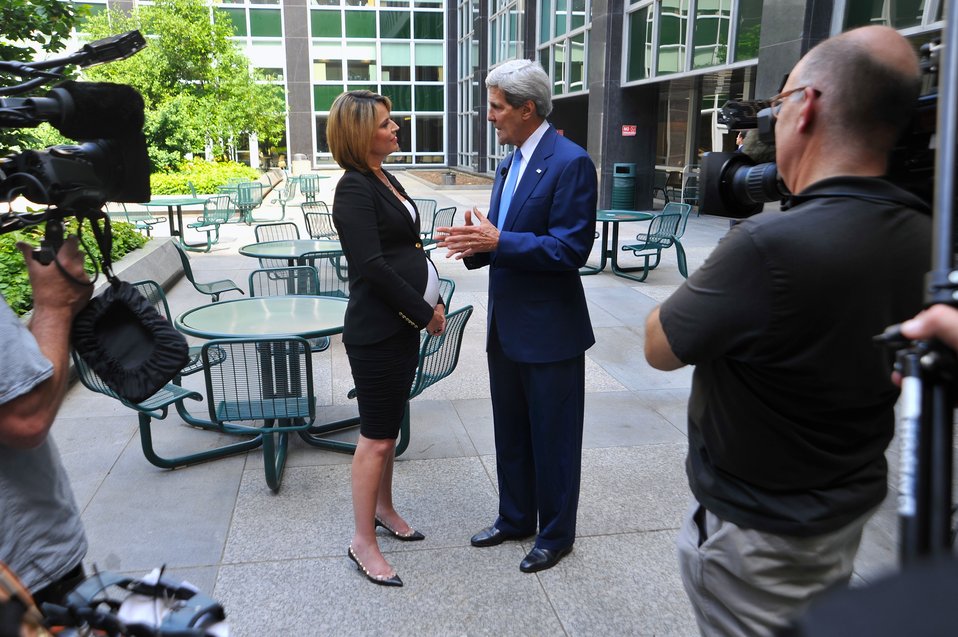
Secretary Kerry Conducts Interview at State Department With 'Today's' Guthrie

U.S. Secretary of State John Kerry conducts an interview with NBC News 'Today' show co-anchor Savannah Guthrie in a courtyard at the State Department on June 18, 2014.